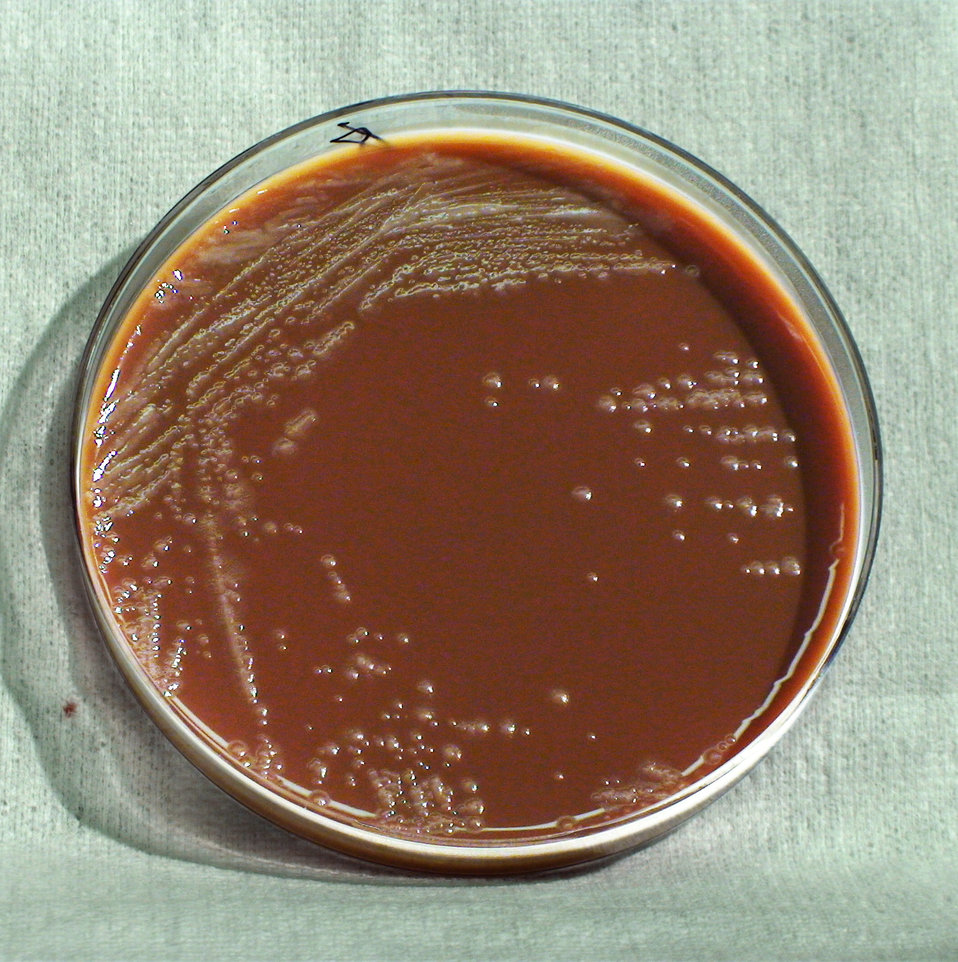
This photograph depicts the colonial morphology displayed by Gram-negative Yersinia pestis bacteria, which was grown on a medium of chocolate agar, for a 48 hour time period, at a temperature of 37�C. See also PHIL 12468 for the appearance of Y. pestis colonies grown on the same medium, and for the same time period, but at a lesser temperature (25�C); PHIL 12469 and 12470, for Y. pestis colonies grown on the same medium, but at a lesser temperature (25�C), and for a greater time period (72hr); PHIL 12472 displaying growth on the same medium, and at the same temperature, but for a greater time period (72hr); PHIL 12473 displaying growth on the same medium, but at a lesser temperature (25�C), and for only half time period (24hr).